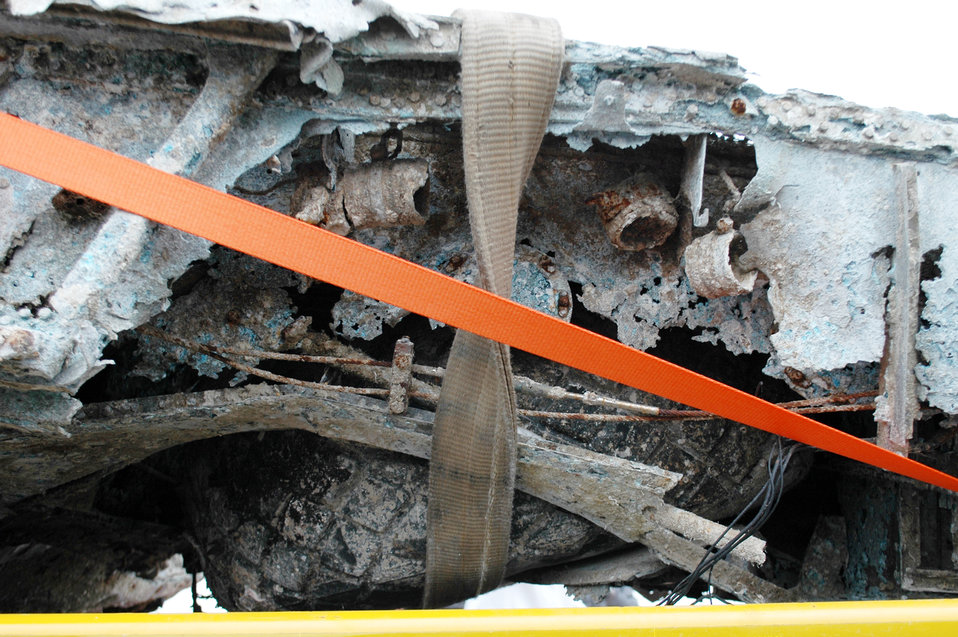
Italian fishermen net historic 'Jug' at sea

Wreckage believed to be that of a P-47 Thunderbolt was recovered from the bottom of the Adriatic Sea May 12, 2009, by an Italian fishing boat crew. An Italian aero club signed for the wreckage during a Nov. 14, 2009, ceremony in Chioggia, Italy, and hope to recover a serial number from the landging gear during their restoration project expected to take two years. The serial number is a key to Air Force historians so they can trace the aircraft to a specific unit and in identifying who was piloting the aircraft the day it crashed.